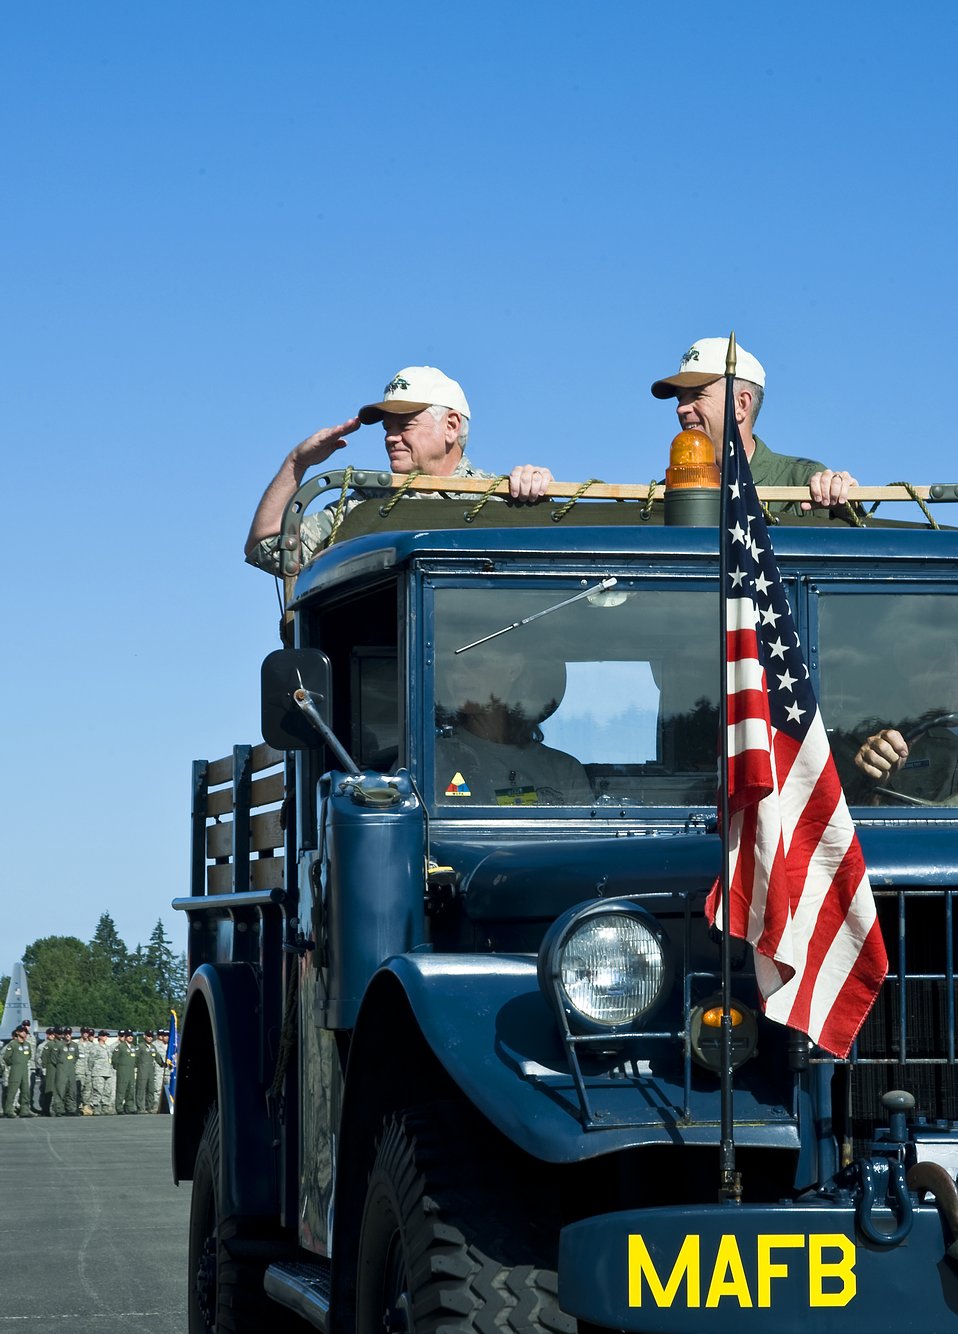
Air Mobility Rodeo begins at McChord

Gen. Arthur J. Lichte salutes all participating countries and teams of the Air Mobility Rodeo 2009 while conducting a pass and review during opening ceremony July 19 at McChord Air Force Base, Wash. General Lichte is the commander of the Air Mobility Command from Scott AFB, Ill.